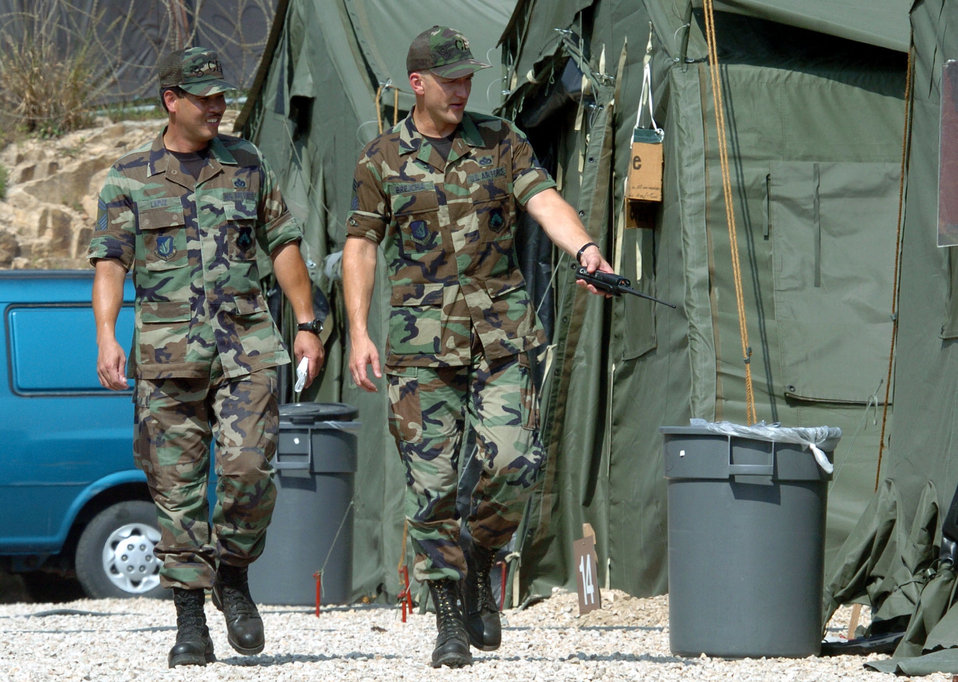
CE benefits from Nighthawk deployment

KUNSAN AIR BASE, South Korea -- Senior Master Sgt. Manny Lapuz (left) and Chief Master Sgt. Mark Brejcha inspect tent city here. They are assigned to the 8th Civil Engineer Squadron. Civil engineers are providing a home for about 300 Airmen who are deployed here from the 49th Fighter Wing at Holloman Air Force Base, N.M.